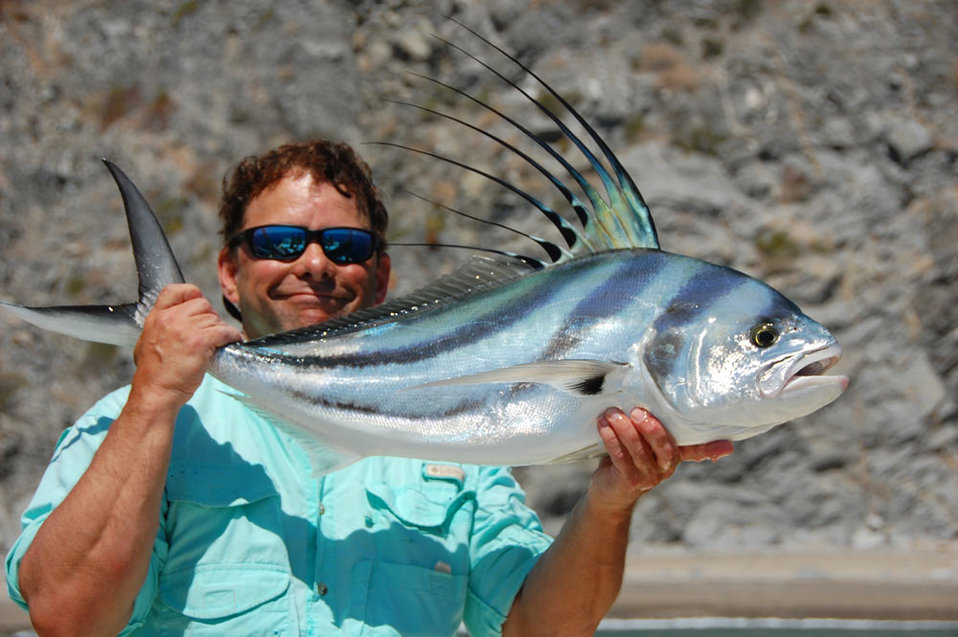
Phil Brna-Alaska Region

Phil Brna, a Fish and Wildlife Biologist with the Anchorage Field Office, was a 2nd Lieutenant in the Army.